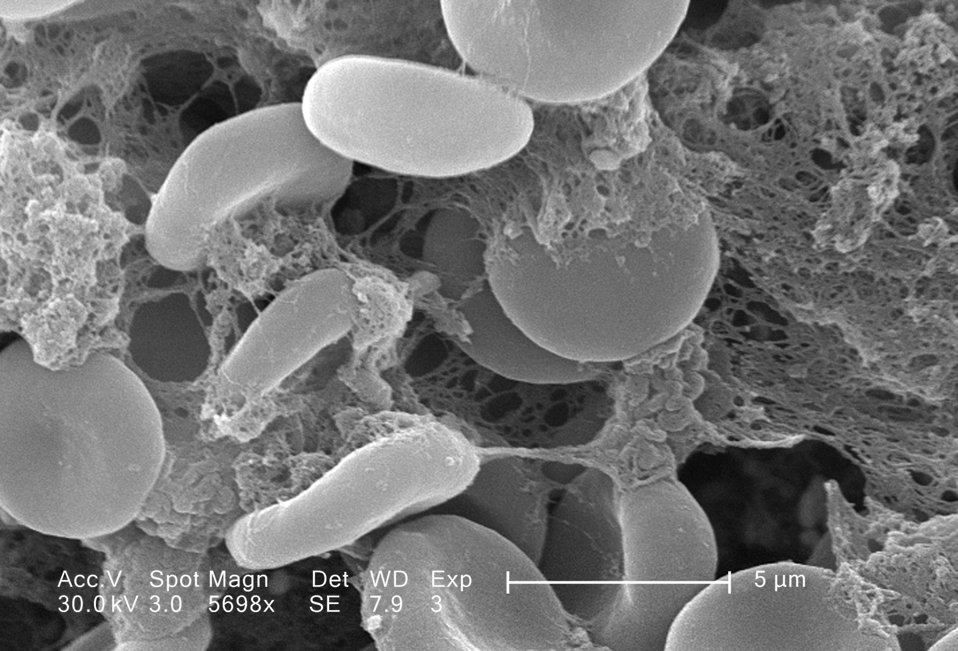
This scanning electron micrograph (SEM) depicted a closer view of number of red blood cells found enmeshed in a fibrinous matrix on the luminal surface of an indwelling vascula catheter; Magnified 5698x. In this instance, the indwelling catheter was a tube that was left in place creating a patent portal directly into a blood vessel.